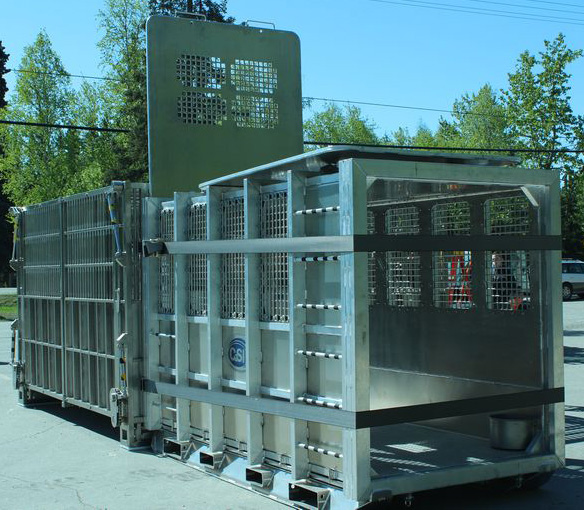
Press Conference on the polar bear holding module. USFWS/Rose Primmer